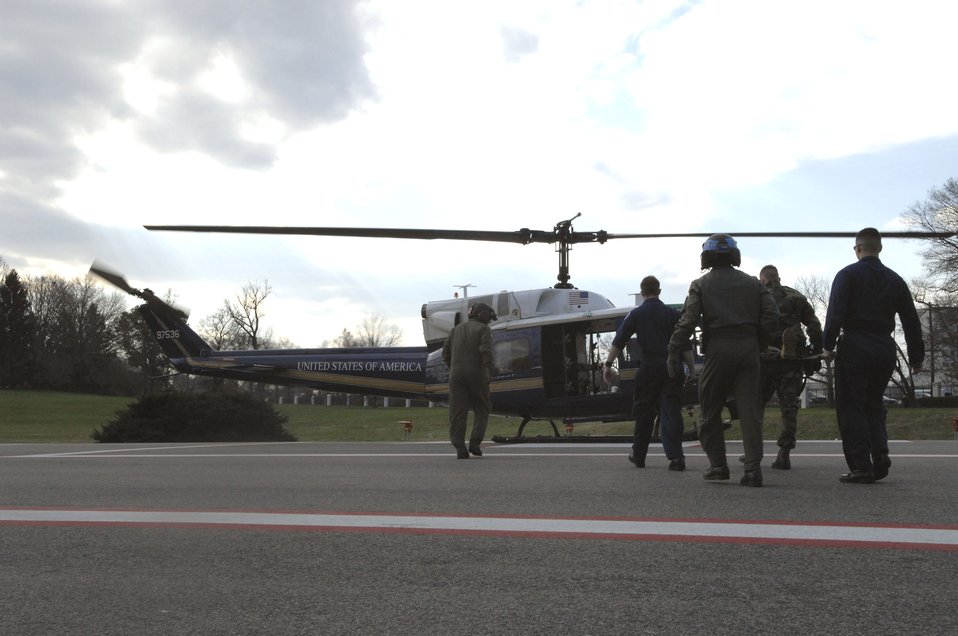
CMAX/Collaborative Multi-Agency Exercise

Navy and Air Force medics prepare to load a